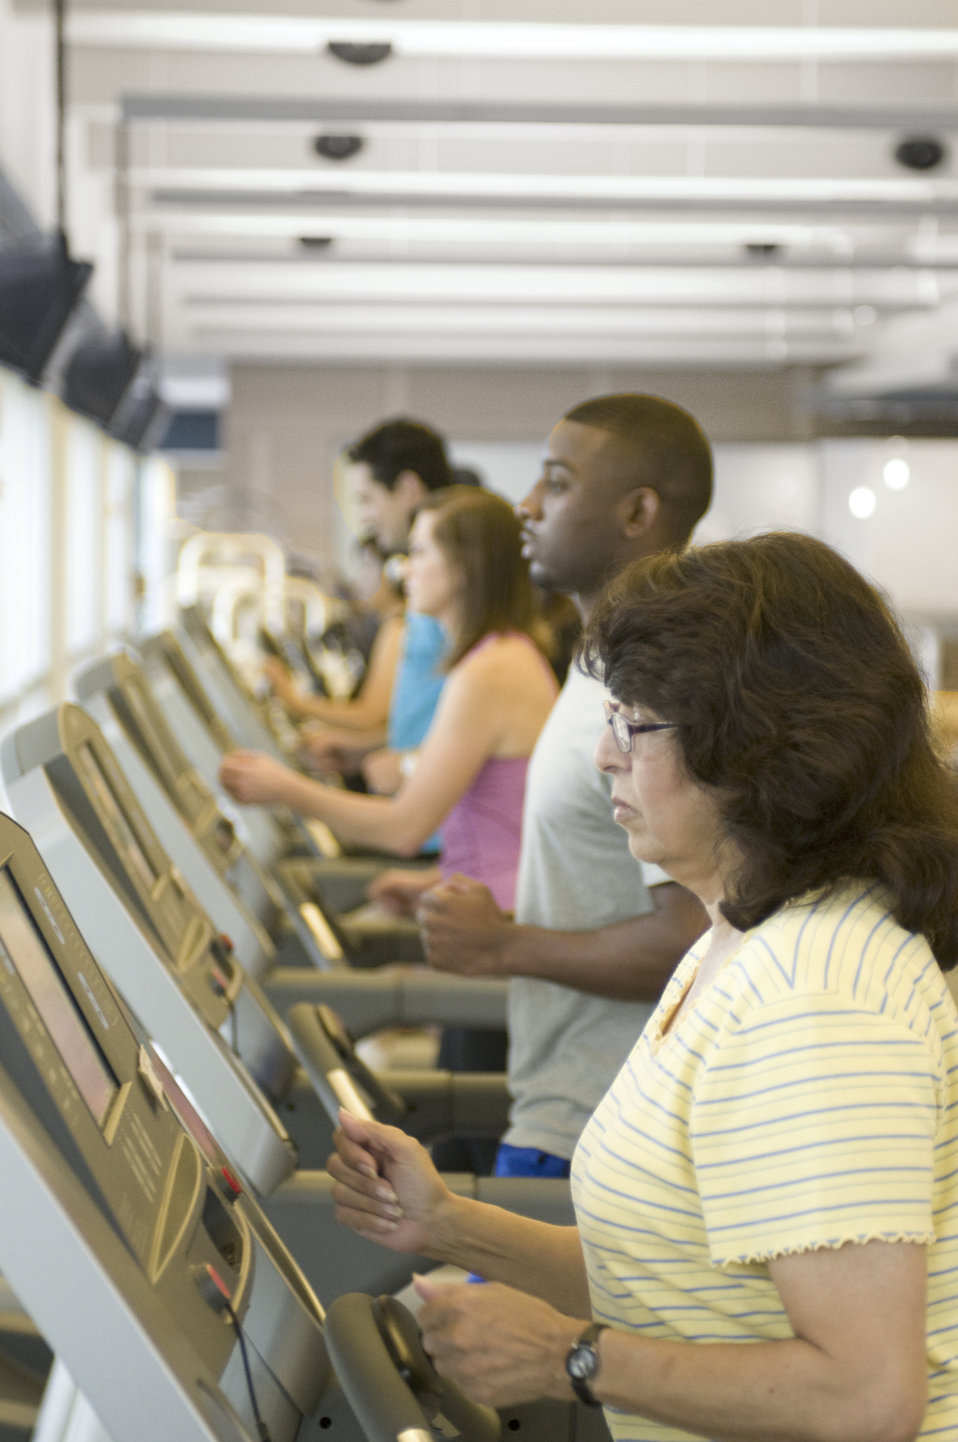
This image was captured on one of the Centers for Disease Control's (CDC) campuses, in the facility's fitness center, where a number of scheduled group classes are provided for employees' health and enjoyment. In this particular view, a number of fitness attendees were making use of the treadmills, taking part in some aerobic exercise.